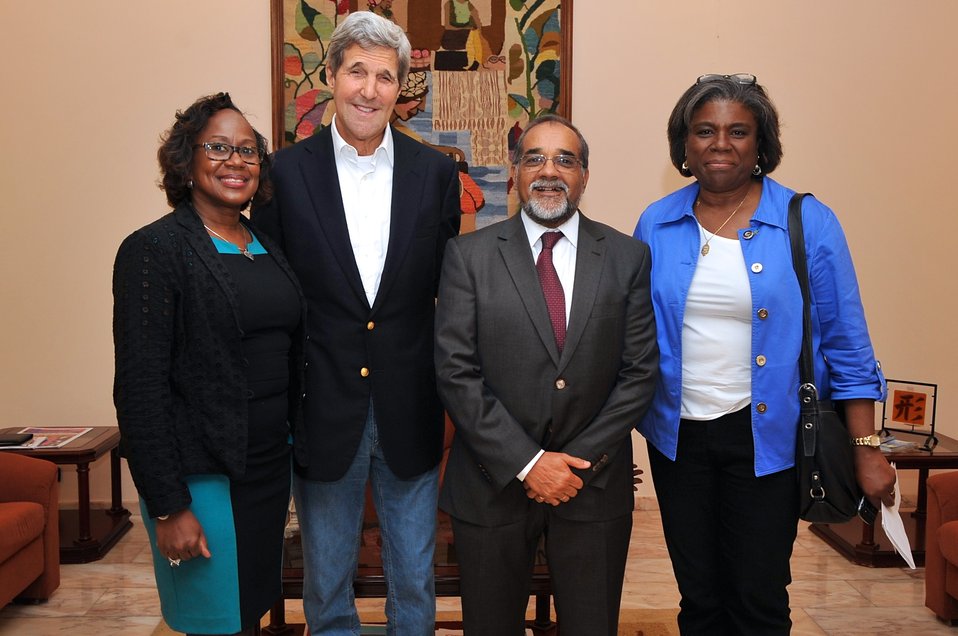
Secretary Kerry, Assistant Secretary Thomas-Greenfield Meet Foreign Minister Borges of Cape Verde on Sal Island

U.S. Secretary of State John Kerry, Assistant Secretary of State for African Affairs Linda Thomas-Greenfield, right, and U.S. Ambassador to Cape Verde Adrienne O’Neal, left, pose for a photo with Foreign Minister Jorge Alberto Da Silva Borges of Cape Verde during an impromptu meeting while the Secretary's airplane refueled on Sal Island on May 5, 2014.